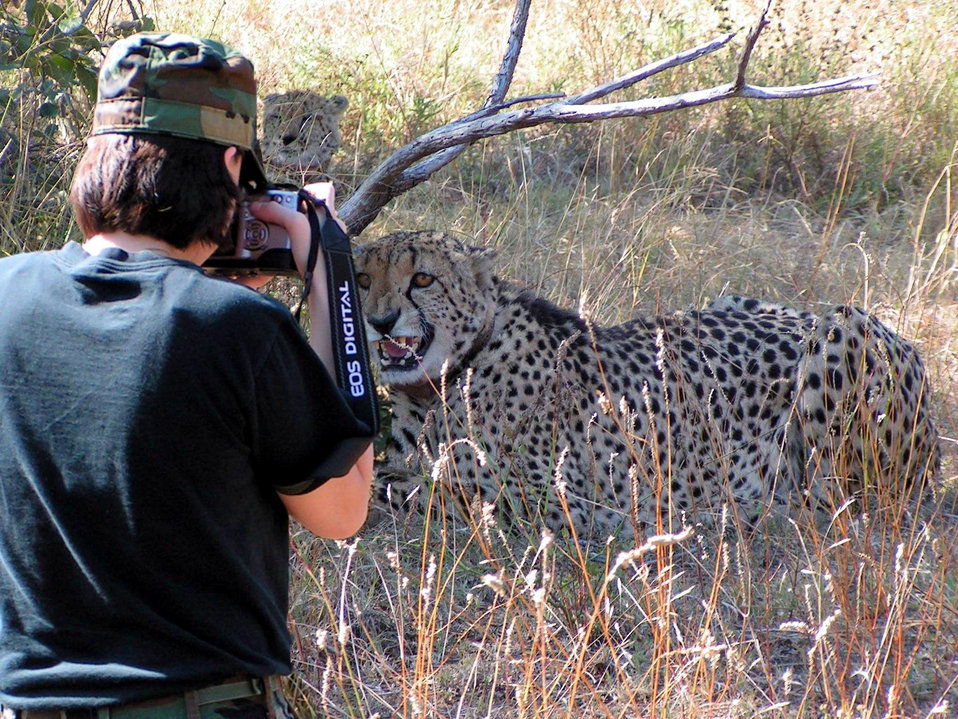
It's a jungle out there

DITHOLO, South Africa -- Capt. Jenny Christian gets up close and personal with one of three cheetahs that roam the South African flightline here. The cheetahs keep the runway free of small mammals that sometimes wander in the way of landing aircraft. Captain Christian is deployed from Royal Air Force Mildenhall, England.